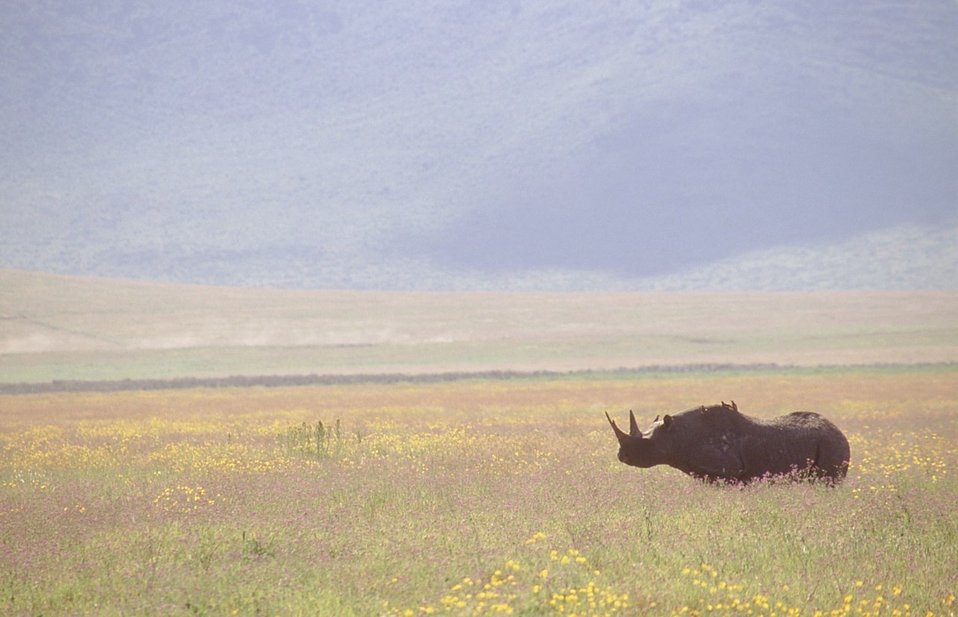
Eastern black rhino

Ngorongoro Crater, Tanzania